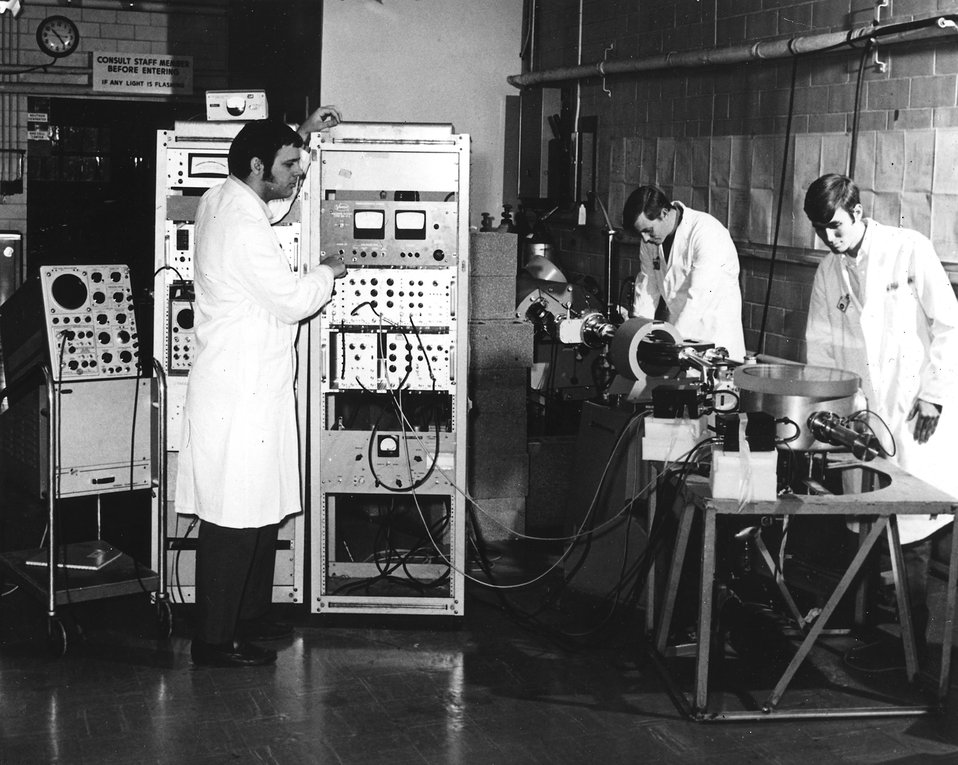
At the Special Training Division of Oak Ridge Associated Universities, student-faculty visits provide and opportunity for low-energy nuclear physics research with small particle accelerators. c. 1972